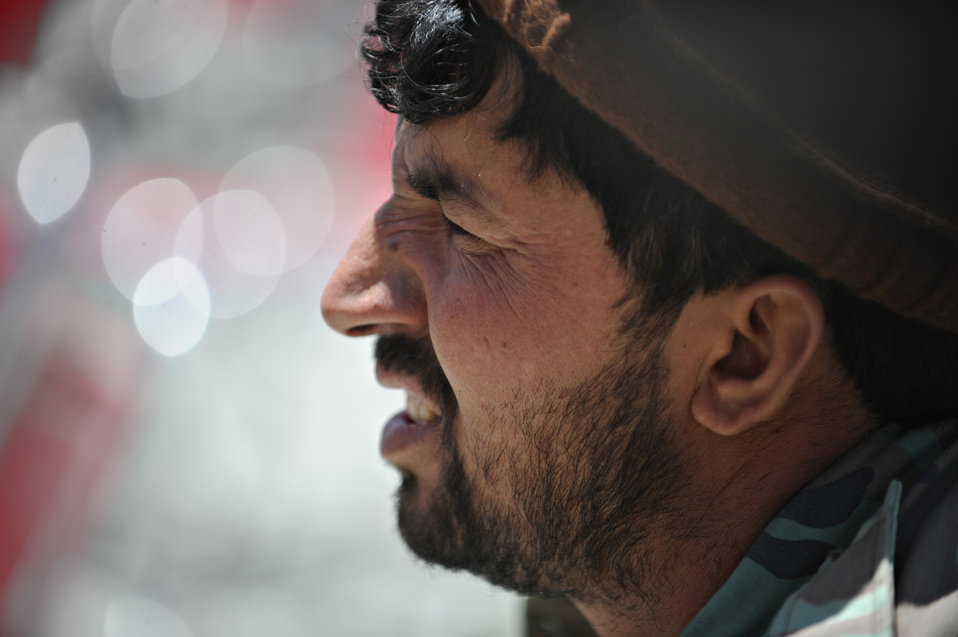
Watching a ceremony to mark the beginning of renovations at the Salang Tunnel on the border of Parwan and Baghlan Provinces, Afghanistan, on Wednesday, June 15, 2011. (S.K.Vemmer/Department of State)